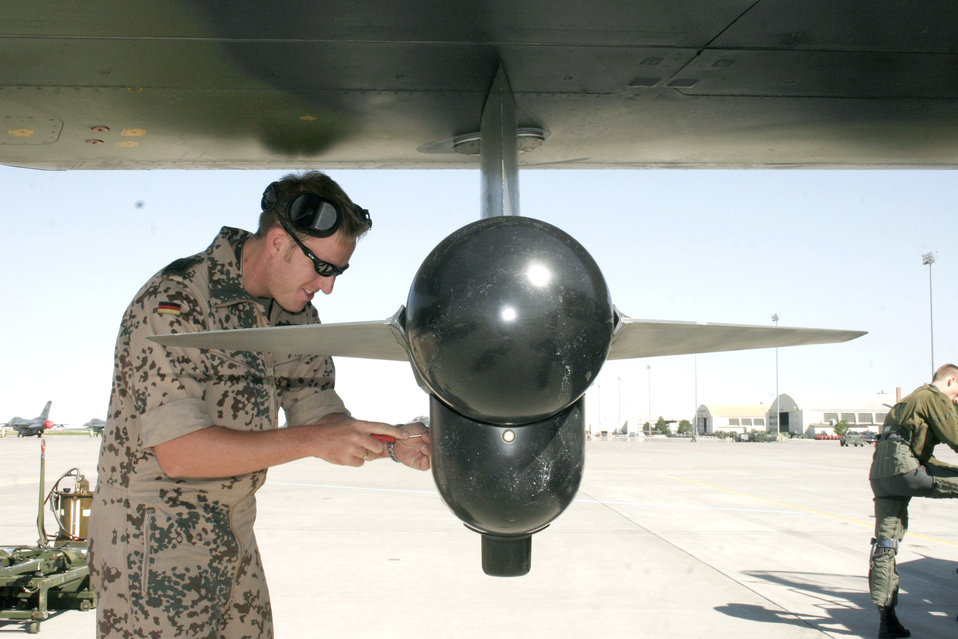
Allied aircrews train for action

Tech. Sgt. Danny Behrens performs a preflight inspection on a Tornado interdiction strike aircraft at Mountain Home Air Force Base, Idaho, on Wednesday, June 21. German air force aircrews and maintenance teams are working alongside their American counterparts during a joint training exercise. Sergeant Behrens is a crew chief with the German air force.